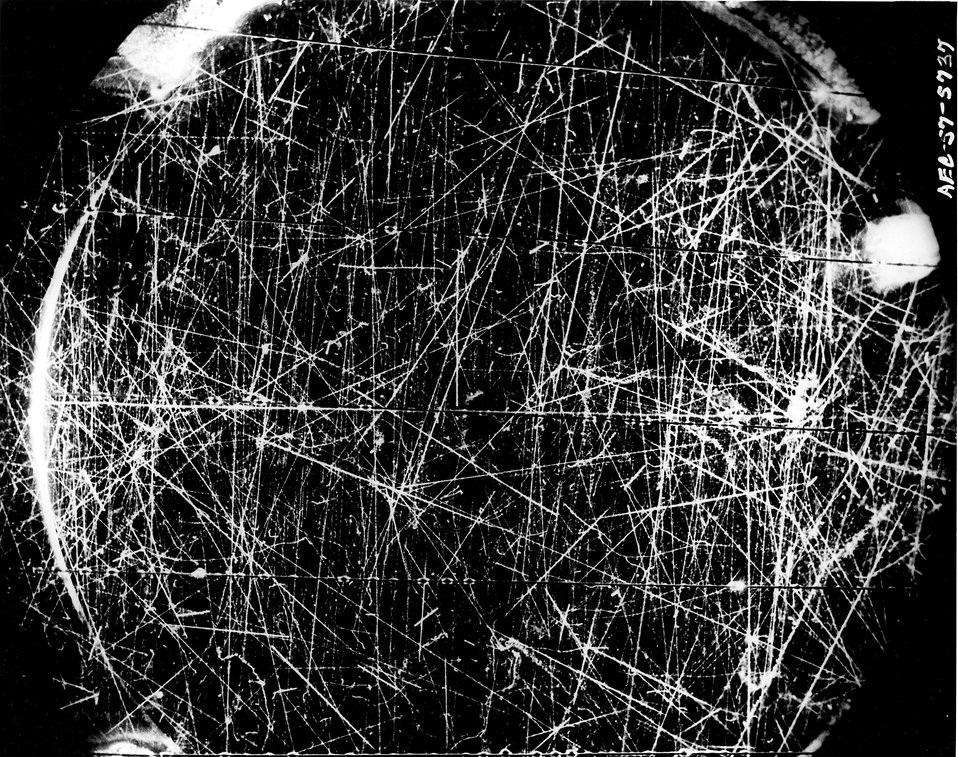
Billion-volt atomic particles in Brookhaven Cosmotron. c. 1957